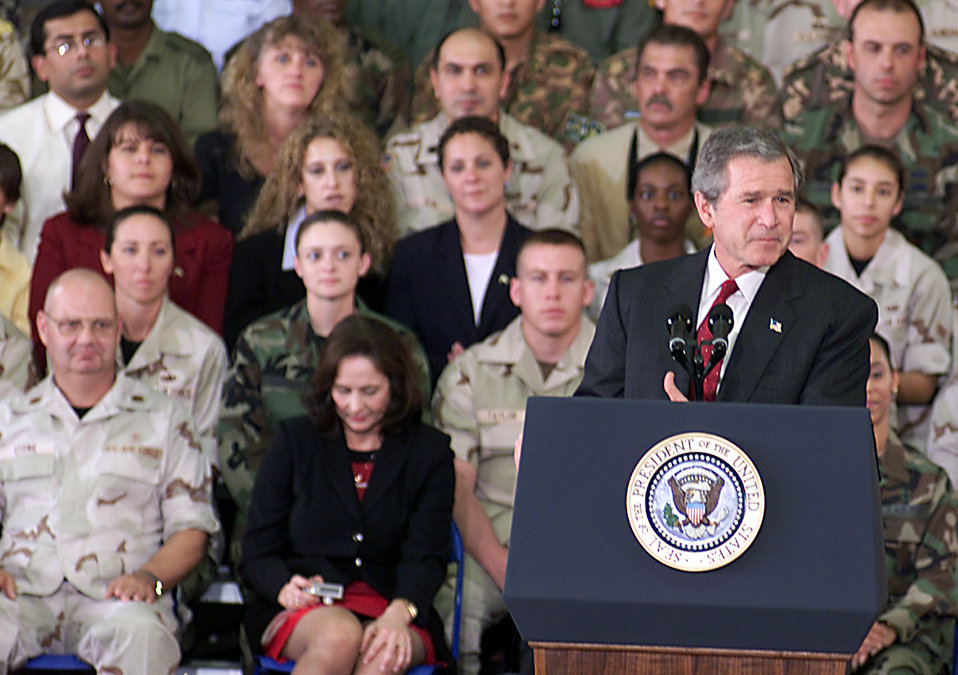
Bush visits

MACDILL AIR FORCE BASE, Fla. -- President George Bush thanks an estimated 10,000 military and civilian personnel for their support of Operation Iraqi Freedom during his visit here March 26. Operation Iraqi Freedom is the multi-national coalition effort to liberate the Iraqi people, eliminate Iraq's weapons of mass destruction, and end the regime of Saddam Hussein.